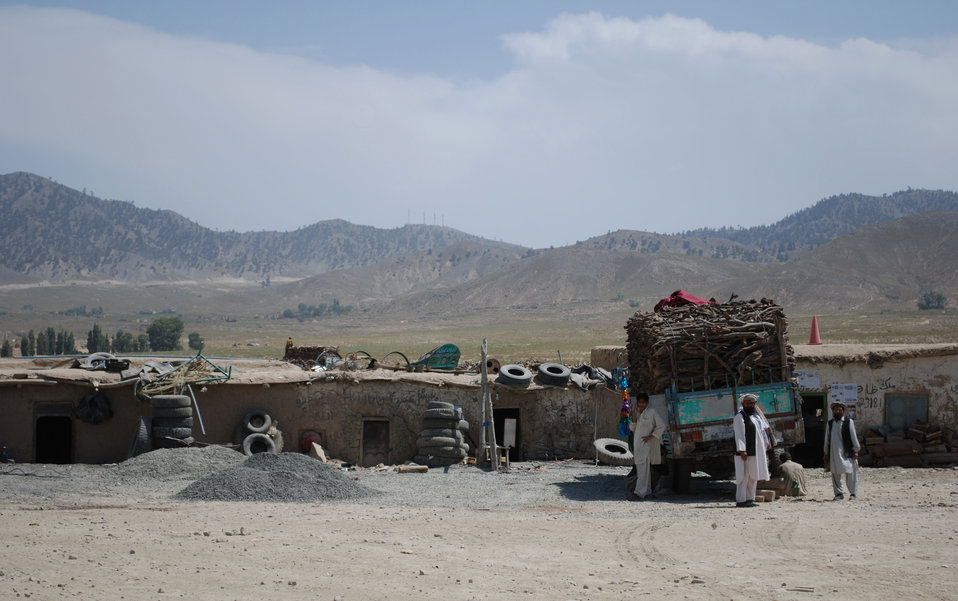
'On the Road' in Paktya Province